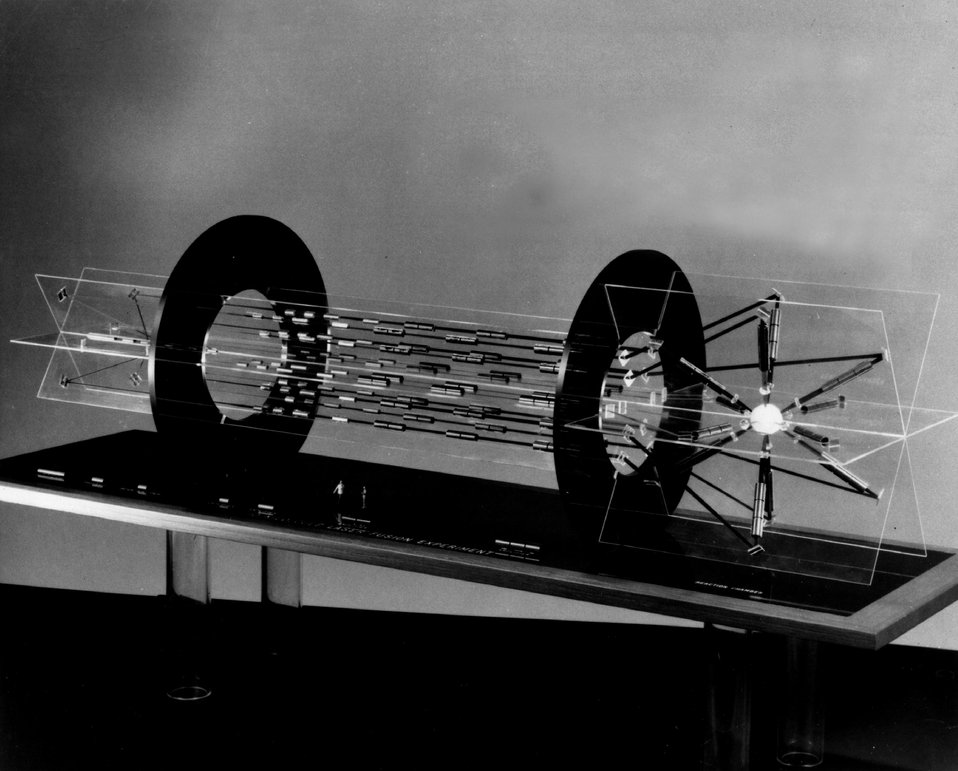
Lasers...A model of the 10,000 joule High Energy Laser with which scientists hope to test the scientific feasibility of generating energy through laser fusion is illustrated here. Circa 1974.